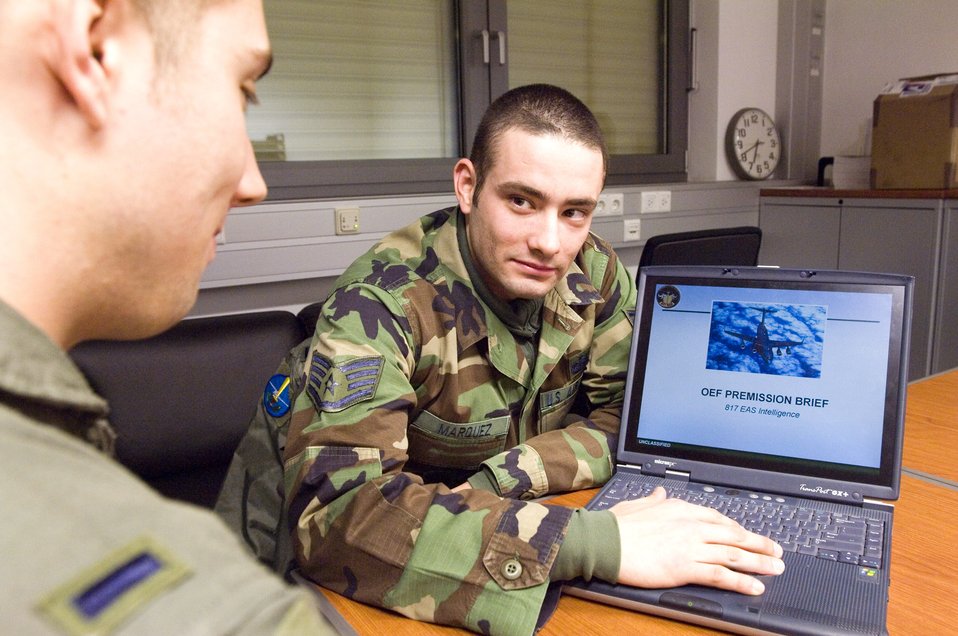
One stop support

Staff Sgt. Tony Marquez, right, reviews an intelligence briefing with 1st Lt. Brad Peregrin at Spangdahlem Air Base, Germany, on Thursday, March 23, 2006. Both Sergeant Marquez, from Chicago, and Lieutenant Peregrin, of Colorado Springs, Colo., are on temporary duty with Detachment 5, 817th Expeditionary Airlift Squadron at Spangdahlem. Sergeant Marquez is an intelligence specialist permanently with the 305th Operational Support Squadron at McGuire Air Force Base, N.J. The lieutenant is a C-17 Globemaster III pilot with the 7th Airlift Squadron at McChord Air Force Base, Wash.